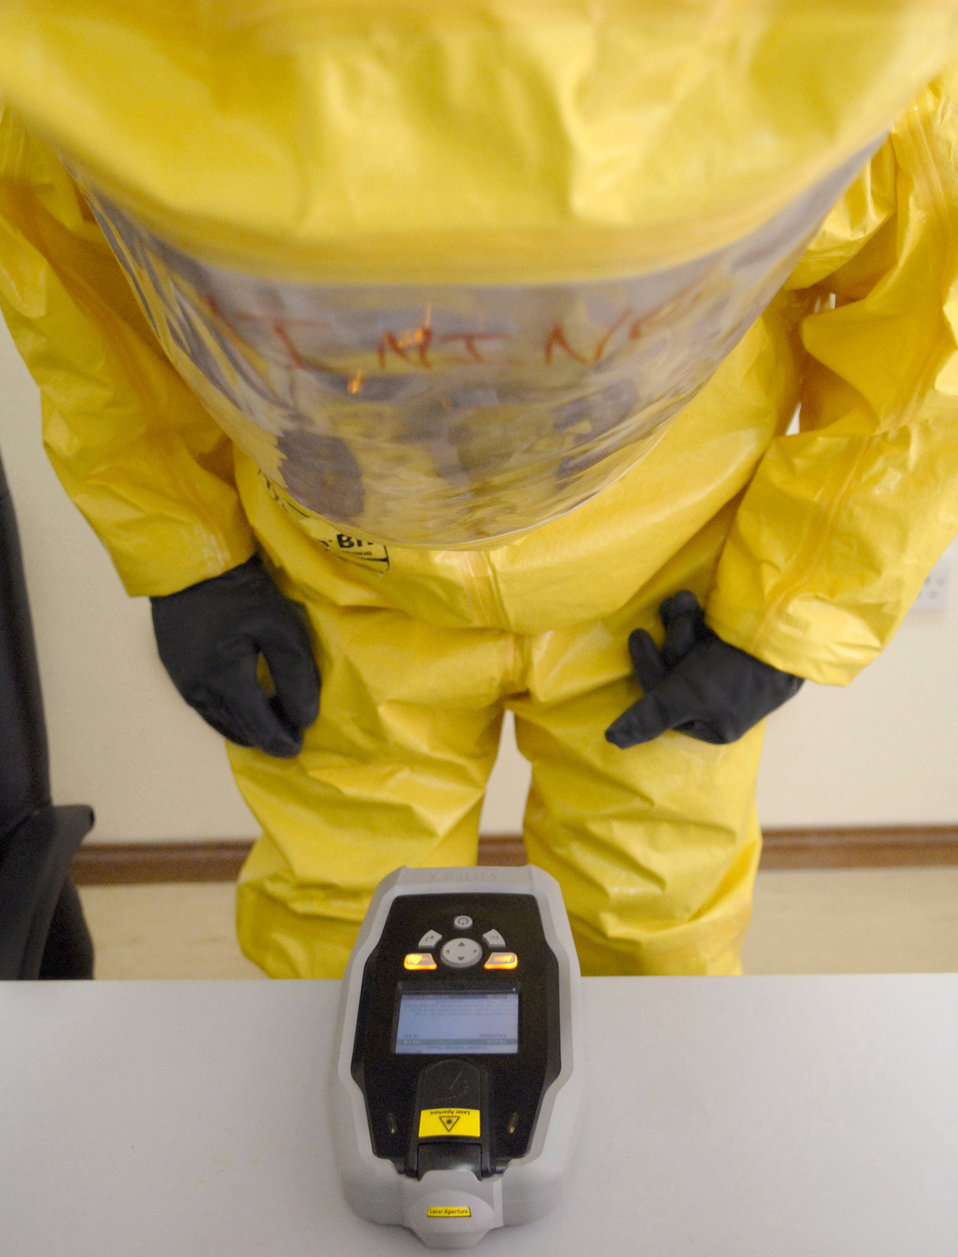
Who you gonna call?

Staff Sgt. Trevor Fettig analyzes a liquid sample for contamination during a unit exercise March 27 at an air base in Southwest Asia. Sergeant Fettig, a readiness and emergency management journeymen with the 379th Expeditionary Civil Engineer Squadron, hails from Lompoc, Calif., and is deployed from Travis Air Force Base, Calif.